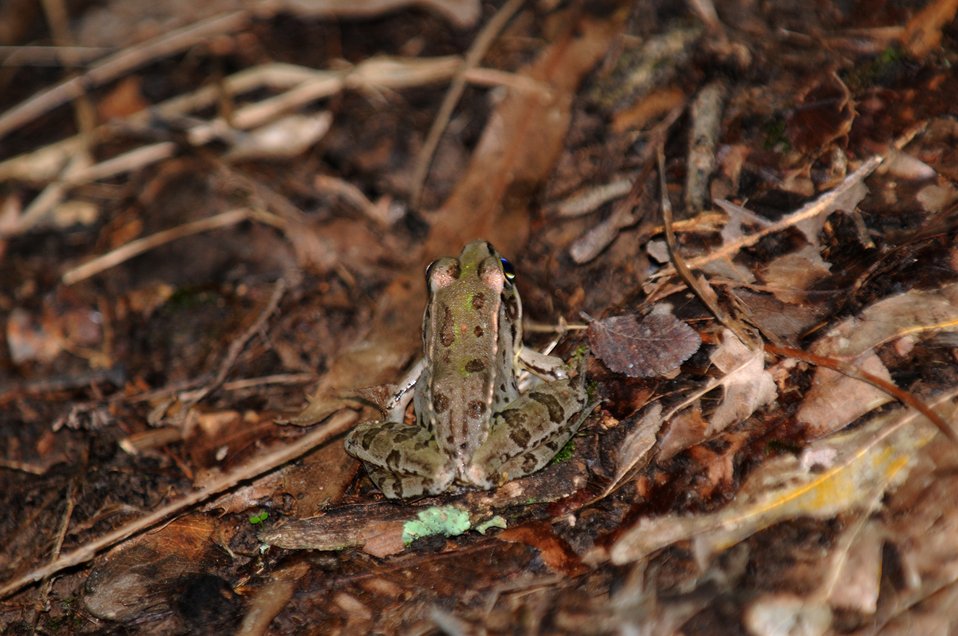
Frog at White River

Healthy Frog At White River National Wildlife Refuge in Arkansas.